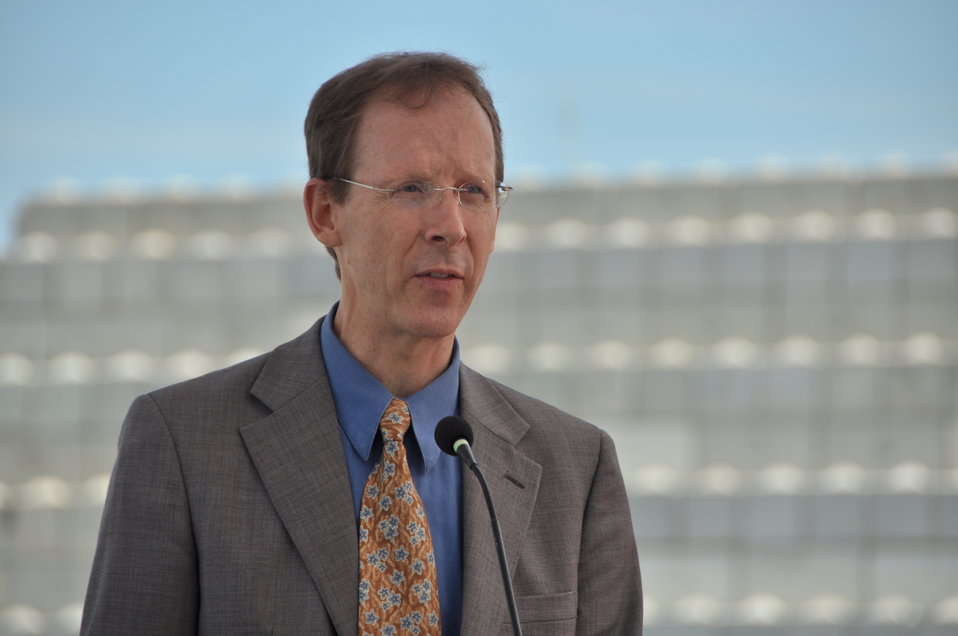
Media Tour of Environmental Remediation of Dioxin Contamination at Danang Airport

USAID Mission Director Joakim Parker addresses the media
Danang, Vietnam
April 24, 2013